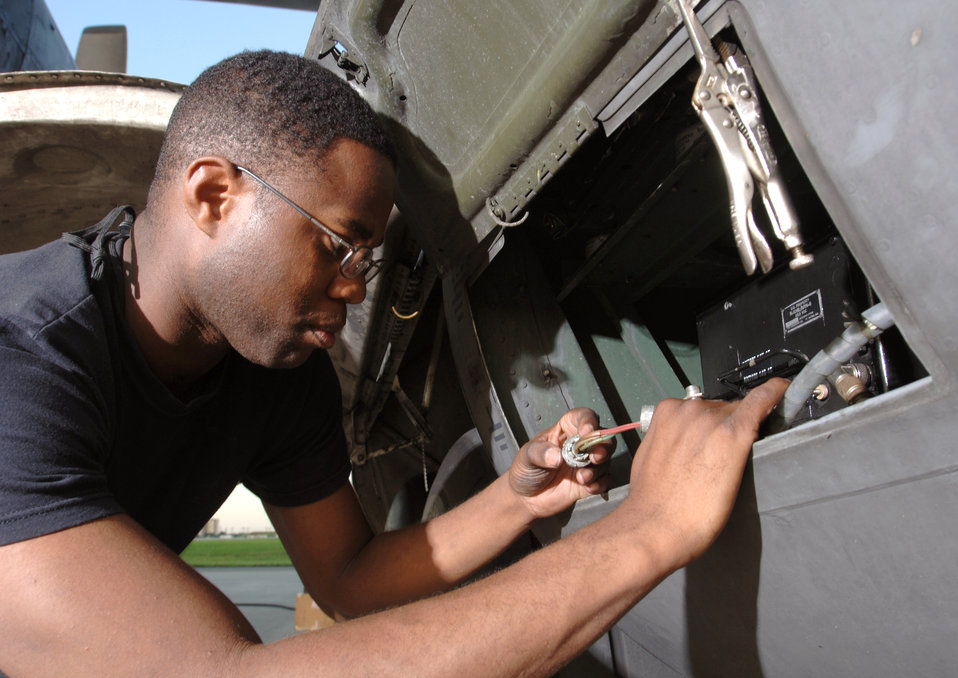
Checkin' things out

YOKOTA AIR BASE, Japan -- Staff Sgt. Anthony Page inspects an automatic direction finder unit on a C-130 Hercules during routine inspection here. Airmen with the 374th Maintenance Squadron here inspect, service and repair assigned and in-transit C-130 aircraft. Sergeant Page is a communications navigation technician with the squadron.